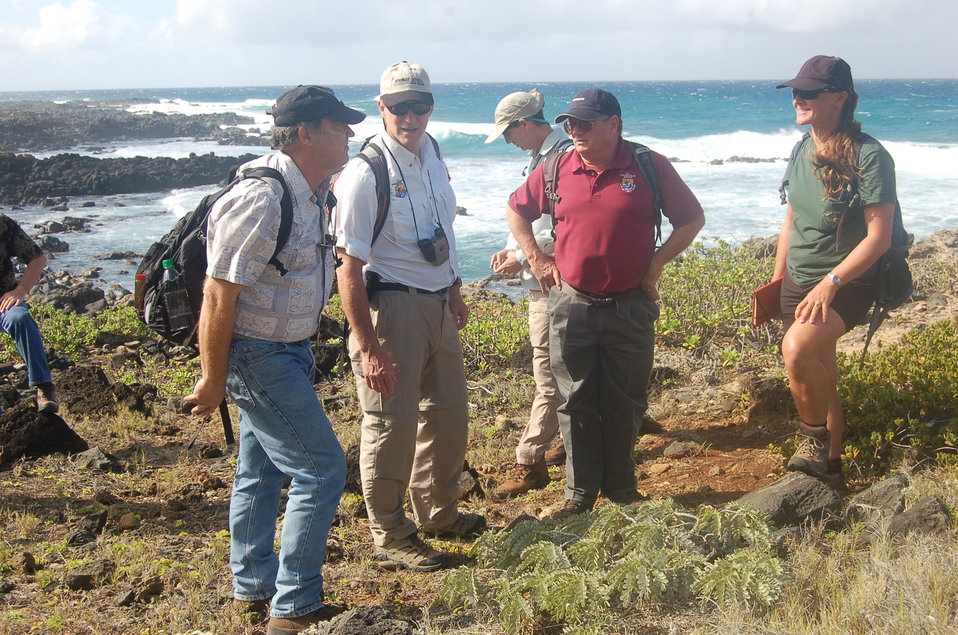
Dan Ashe tours Ka'ena Point State Park in Hawaii

USFWS Director Dan Ashe talking with Service Employees at the park.